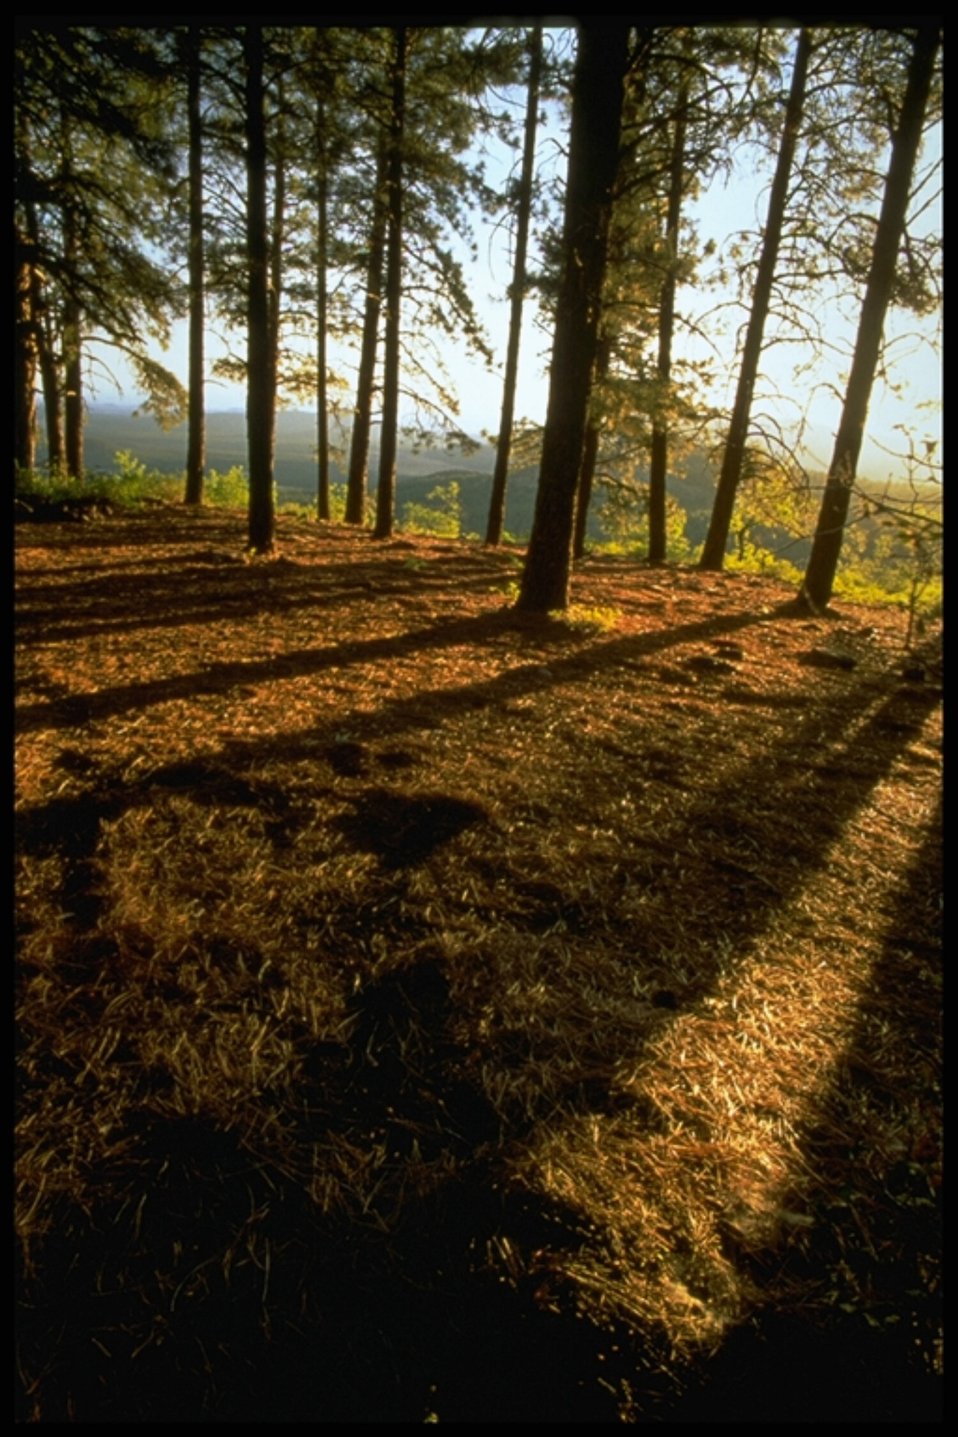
As the sun peeks over the mountains, shadows stretch across forest land in the Grand Canyon-Parashant National Monument.